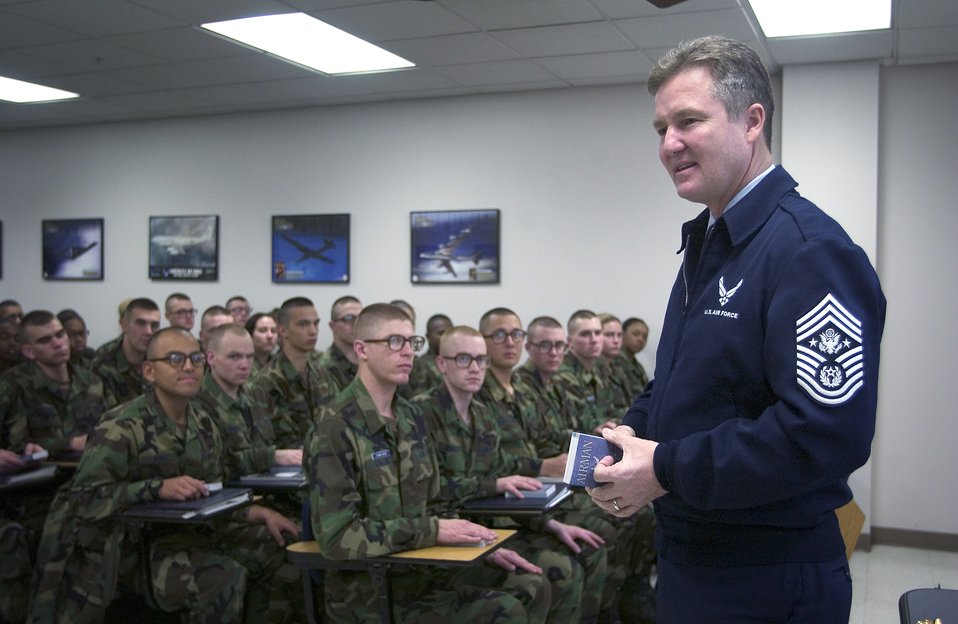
Chief Murray launches 'handbook' program

LACKLAND AIR FORCE BASE, Texas -- Chief Master Sgt. of the Air Force Gerald R. Murray addresses Air Force trainees of the 326th Training Squadron here before presenting each of them the new Airman handbook. The handbook is a pocket-sized book that covers heritage, national leaders, Air Force operations and a variety of military-related topics. A copy is being provided to every new Airman.